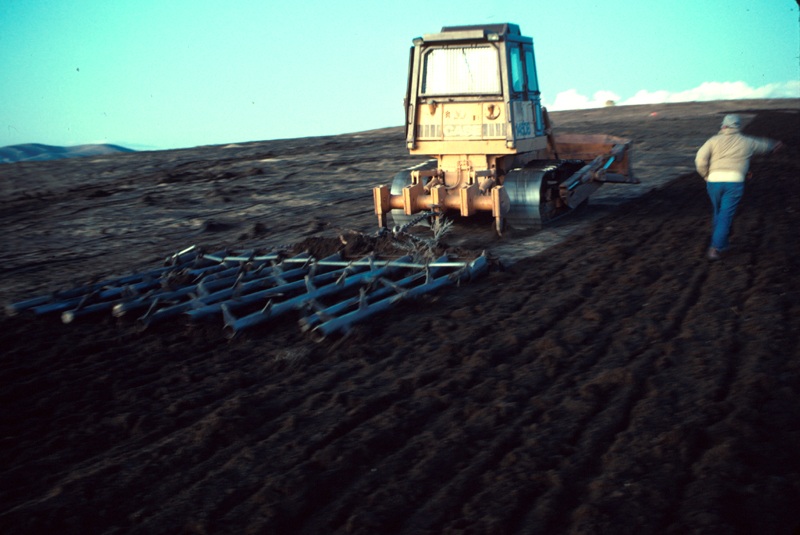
Harrow Foothills Fire Rehab Range Restoration Project Lower Snake River District